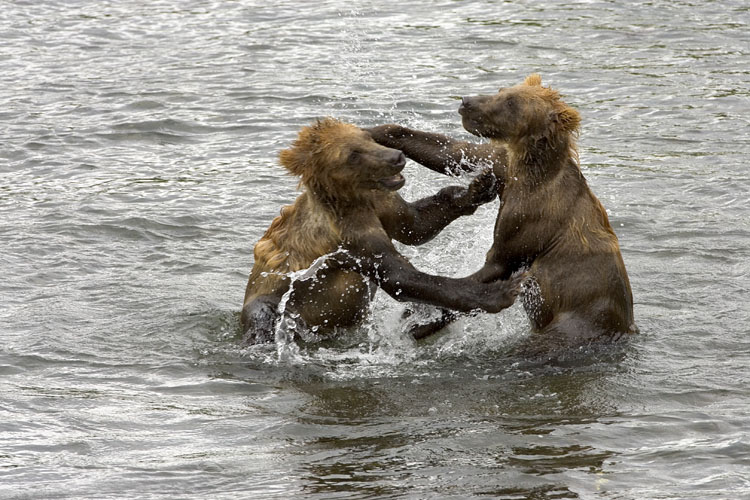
Kodiak Brown Bears

Playful Kodiak Bears